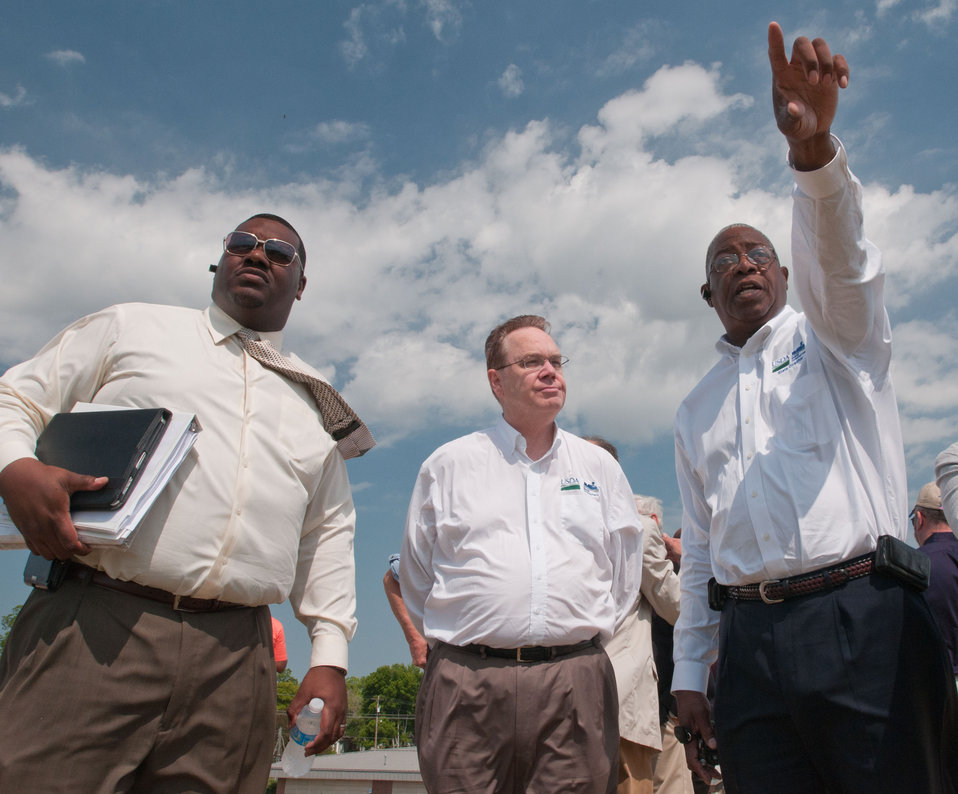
U.S. Department of Agriculture Louisiana State Director Clarence W. Hawkins (right) explains to Undersecretary for Rural Development Dallas Tonsager (center), various aspects of the Mississippi River flooding in front of the levee they stand on in Vidalia, LA, on Thursday, May 19, 2011. Supporting the event production was Assistant to State Director Lee Jones (left).